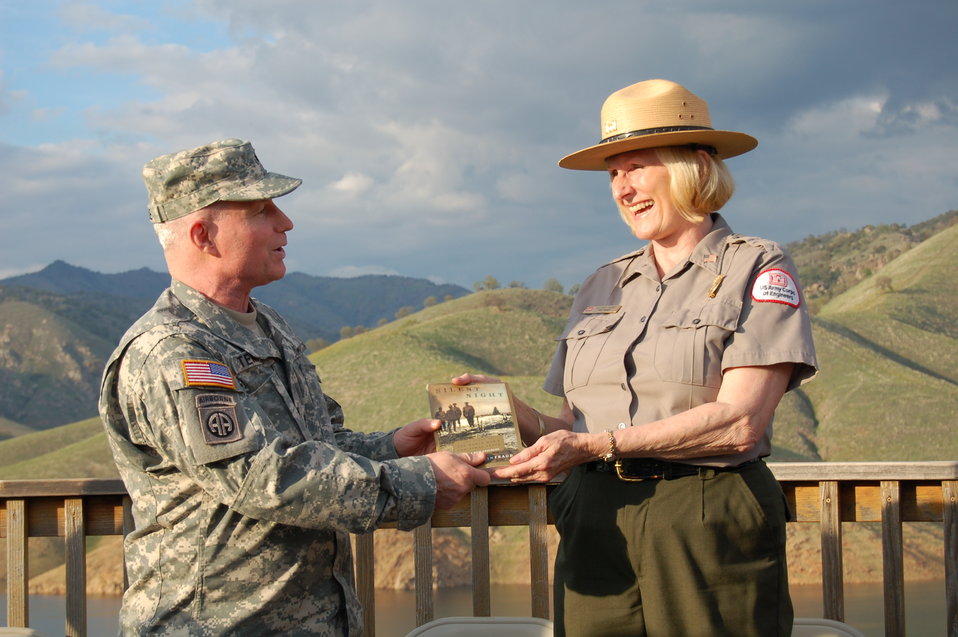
Historic WWI Truce remembered at Lake Kaweah

Acting U.S. Army Chief of Engineers, Maj. Gen. Bo Temple (left), offers a personally inscribed book to Valerie McKay, Sacramento District park ranger at Lake Kaweah, Calif., March 15, 2012. Temple added a stop on his California tour to Lake Kaweah’s visitors center to meet McKay after she responded to his holiday e-mail referencing the historic Christmas Day Truce of 1914. McKay’s late grandfather fought in World War I for the British and participated in the famous event, where British and German soldiers laid down their arms to sing and remember Christmas before resuming fighting.